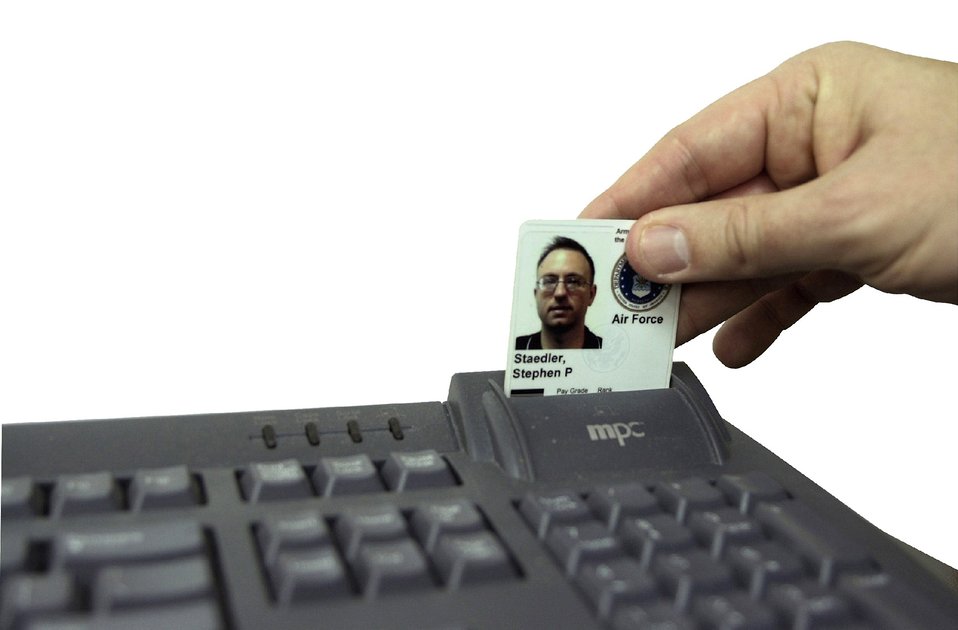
New policy protects Air Force networks

The common access card logon helps Air Force information stay secure. A new policy for Air Force encyrpting and digitally signing e-mails is now in effect.